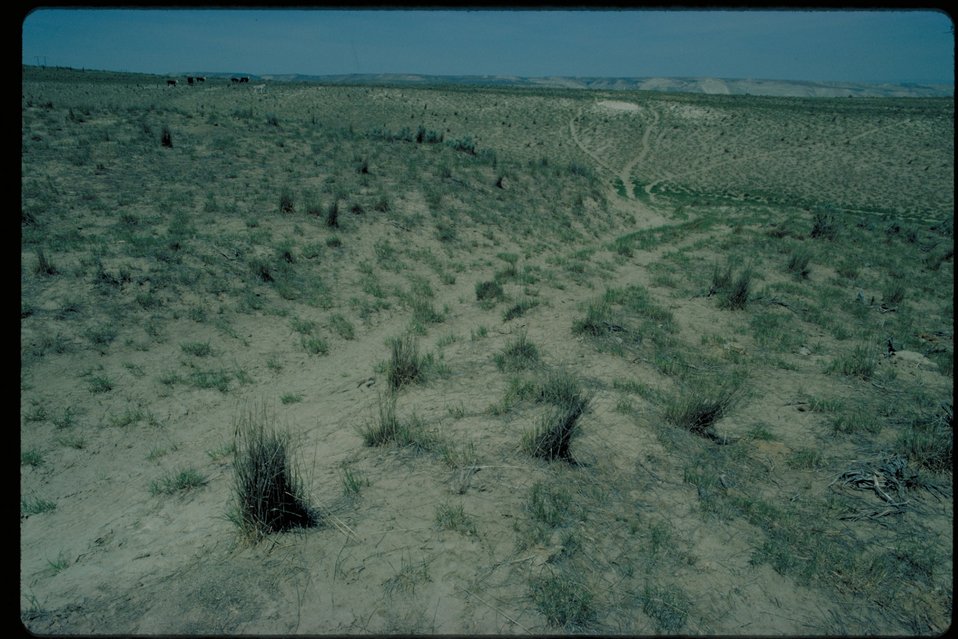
Oregon Trail west out of Owsley Bridge Cultural resource Historic area LSRD Lower Snake River District